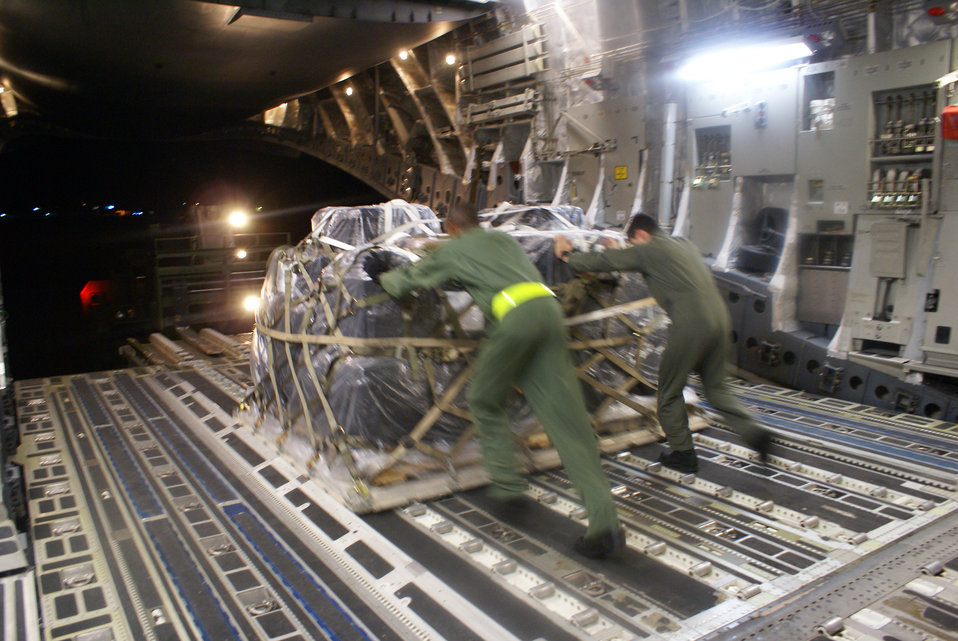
relief efforts

Tech. Sgt. Derrick Russell (left) and Senior Airman Jonathan Duarte, both 7th Airlift Squadron loadmasters from McChord Air Force Base, Wash., offload Federal Emergency Management Agency communications equipment from a McChord C-17 Globemaster III Oct. 2, 2009, at Pago Pago International Airport, American Samoa.